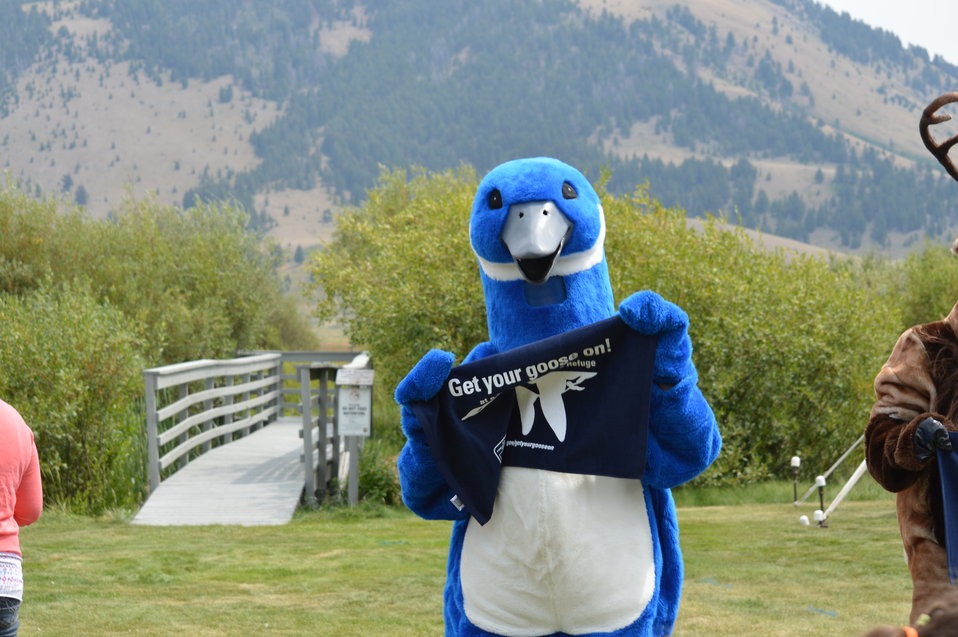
Get Your Goose On! - National Elk Refuge Style

On August 10, 2012 the U.S. Fish and Wildlife Service and Partners celebrated the 100 year anniversary of the establishment of the National Elk Refuge. In these photos, young attendees, along with Puddles the Blue Goose and the National Elk Refuge's mascot, showed us how to Get Your Goose On! with style.